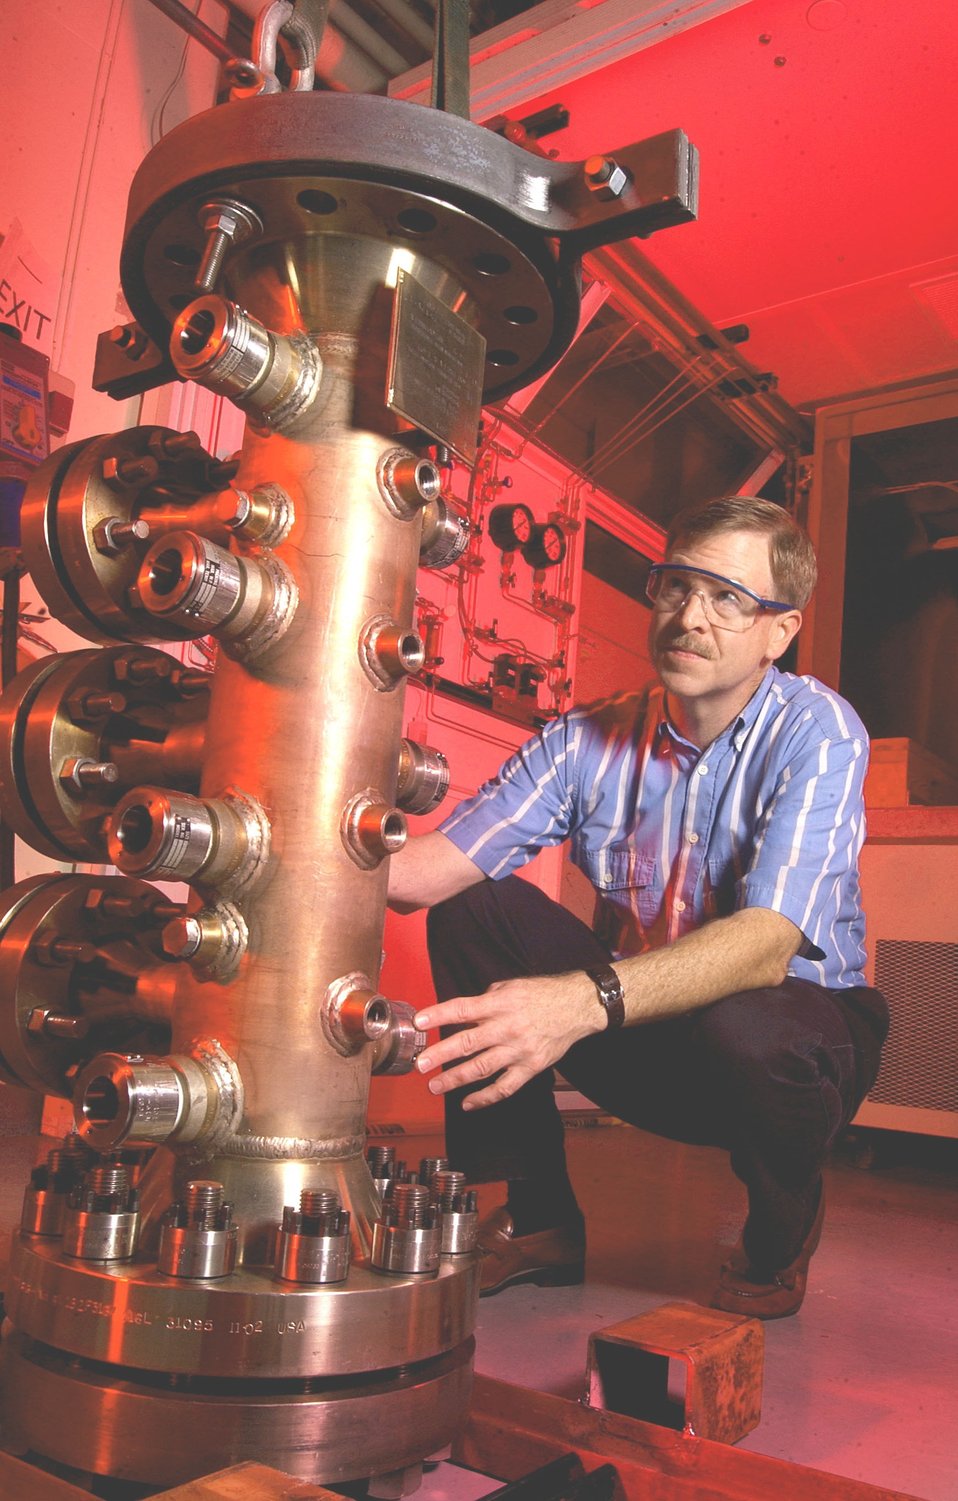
Paul Deffenbaugh, an engineer with RDS/Parsons, which provides support services for the Office of Science and Engineering Research at the National Energy Technology Laboratory, inspects the 15-liter methane hydrate cell following test operations.